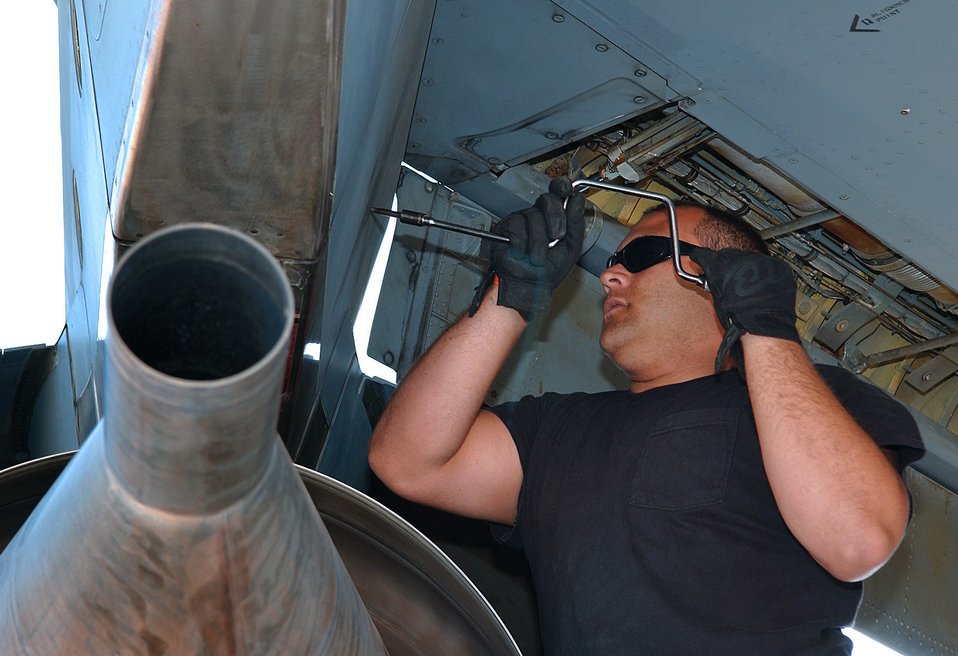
Maintainers keep Stratotankers airborne

SOUTHWEST ASIA -- Senior Airman Felix Rodriguez removes an engine pylon access panel on a KC-135 Stratotanker during an inspection at a forward-deployed location here. He is a crew chief assigned to the 379th Expeditionary Aircraft Maintenance Squadron.